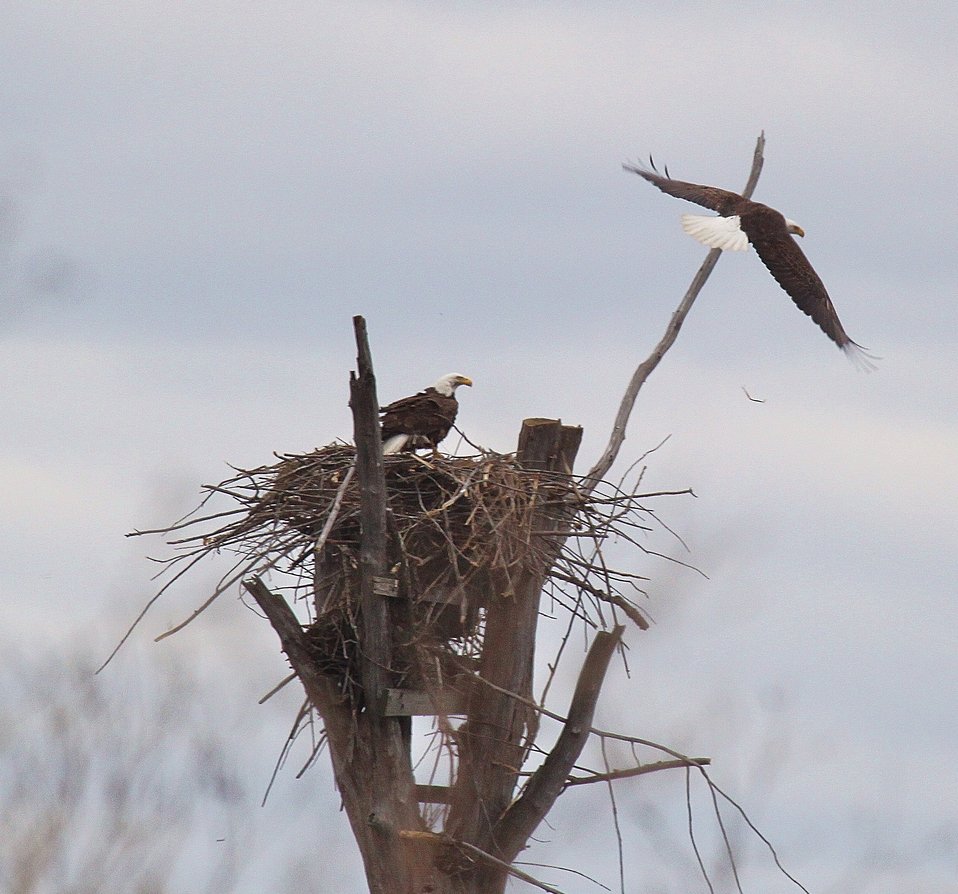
Bald eagle nesting

For the second year in a row, Missisquoi NWR provides nesting habitat for bald eagles.